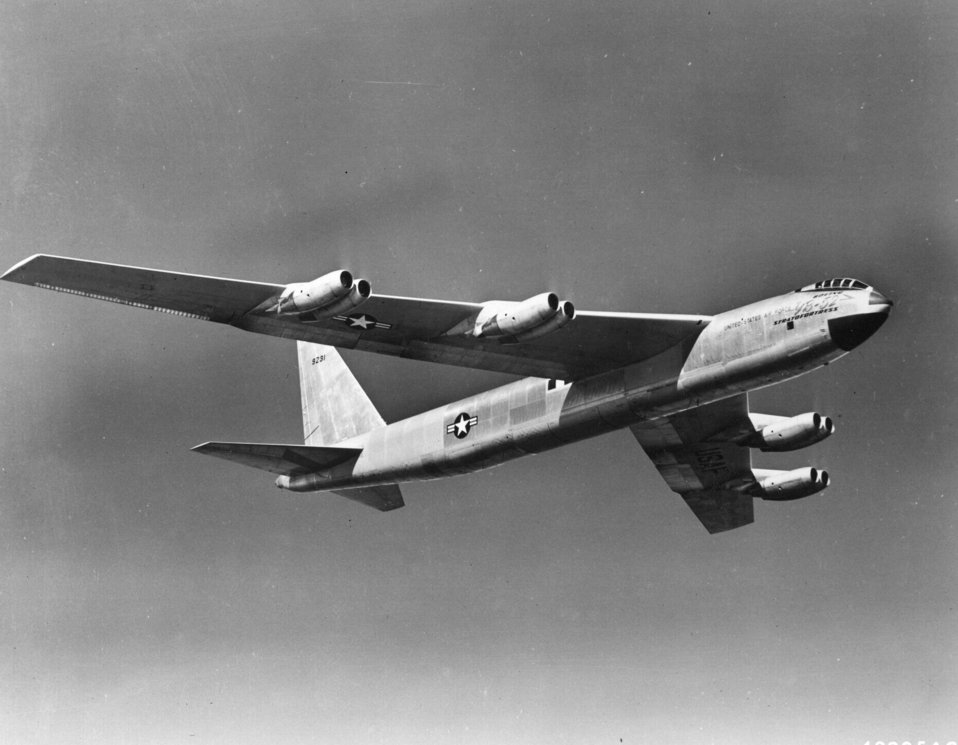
YB-52

1950's -- YB-52 in flight